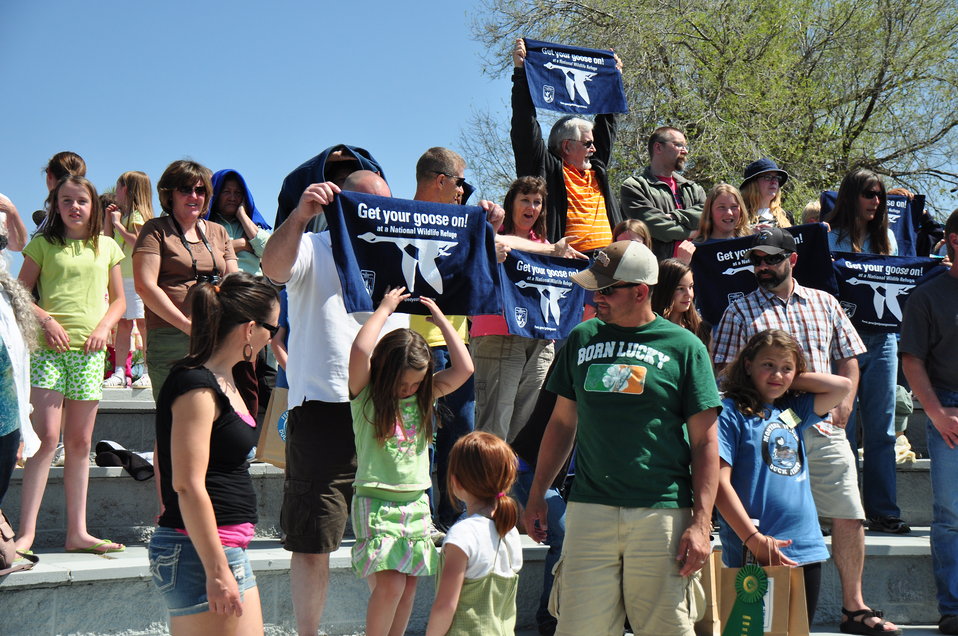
Get Your Goose On!!!

More than 100 people attended the 2012 Montana Junior Duck Stamps award ceremony. The folks pictured here posed with their towels as a videographer captured footage of them screaming, in unison, 'Get Your Goose On!'